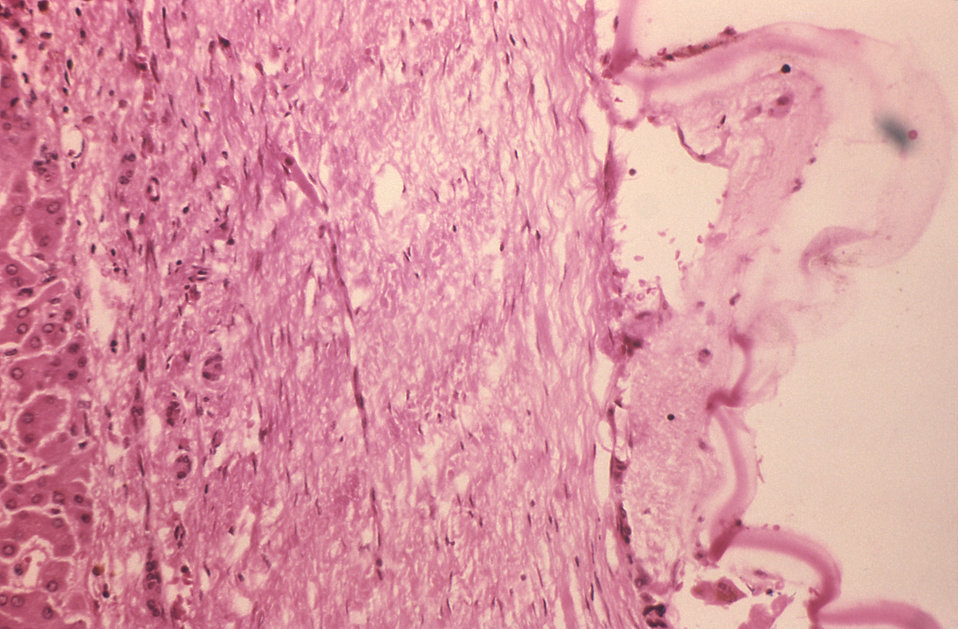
This is a photomicrograph of Echinococcus vogeli taken from a gorilla at the Los Angeles Zoo.